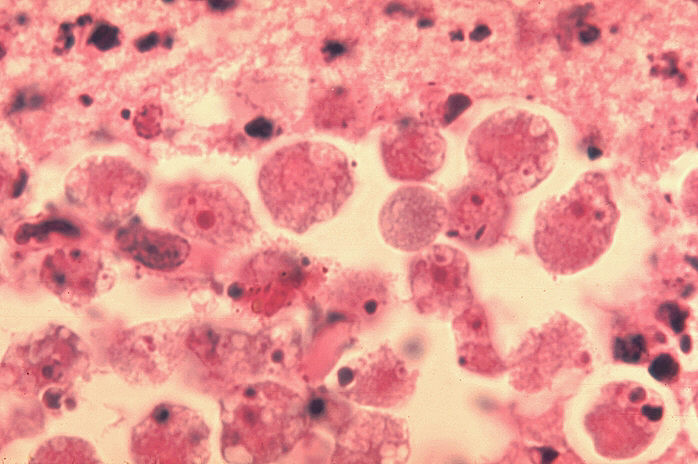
Histopathology of Naegleria gruberi experimental meningoencephalitis. Parasite, ameba, brain.